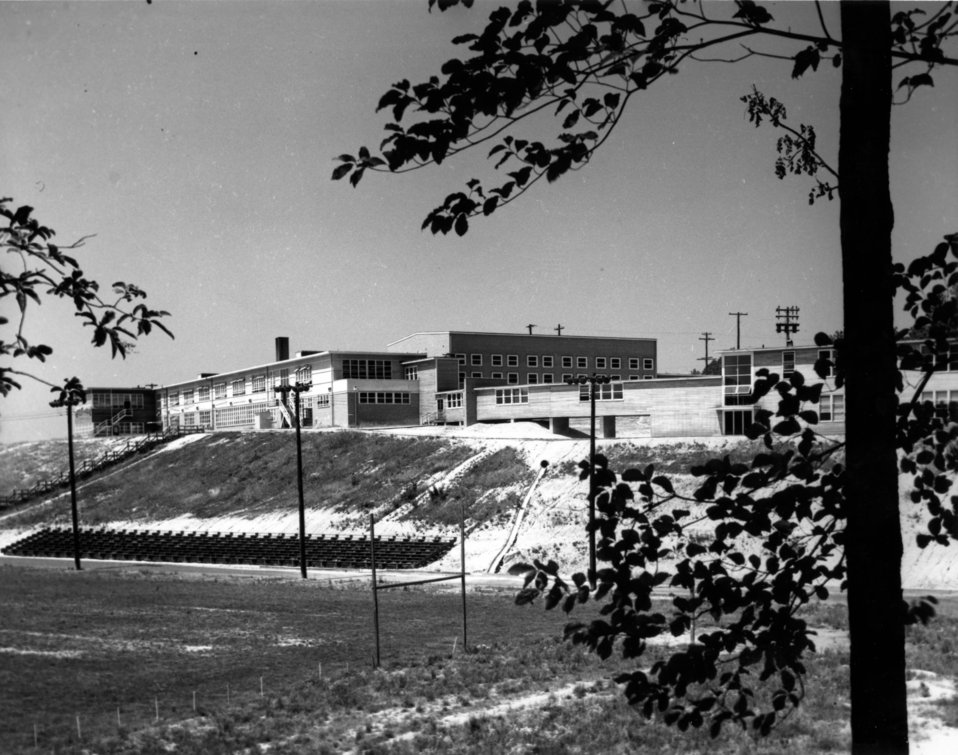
Schools at Oak Ridge